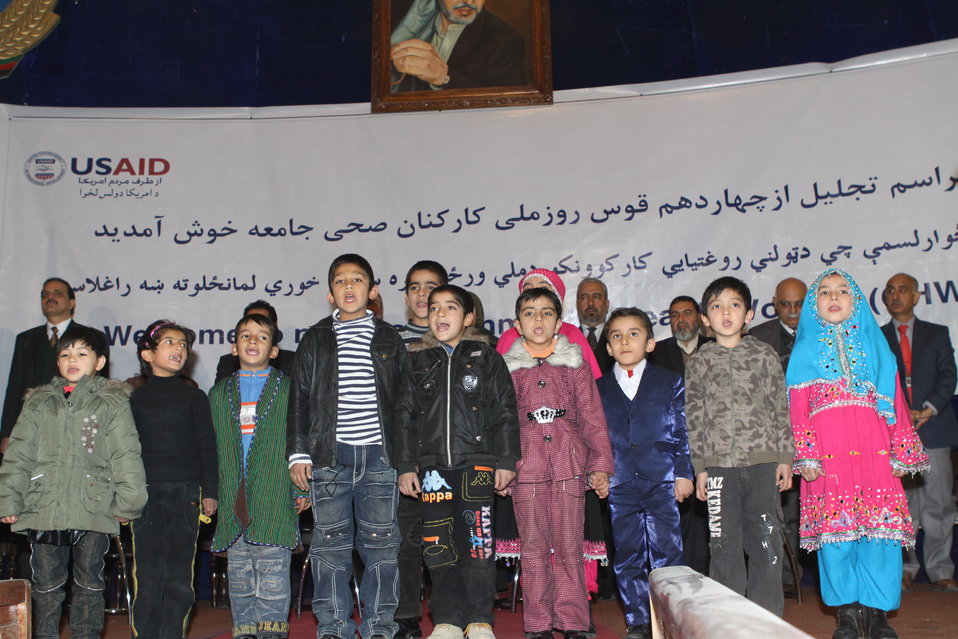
Community Health Workers Celebrated

Kabul, Afghanistan | December 5, 2010 — In support of the United Nations designated International Volunteer Day for Economic and Social Development, Afghanistan’s Ministry of Public Health celebrated its annual Community Health Worker Day today. Acting Minister of Public Health Dr. Suraya Dalil, USAID Senior Deputy Mission Director Robert Hellyer, other government officials, and international donors joined in recognizing the critical contribution of community health workers in Afghanistan and encouraging them to continue their voluntary support to their communities.
The event praised the contributions of the more than 22,000 volunteers throughout the country who deliver community level health-education, counseling, and services out of village health posts located in private homes. The Ministry of Public Health envisioned that community-based healthcare programs will actively encourage communities and families to adopt healthy lifestyles and behaviors, and provide families access to high quality and socially acceptable preventative medicine and life-saving services.
“We have 22,000 community health workers in Afghanistan that are able to implement the basic and standard medicines. They all have been trained through a job description,” said Minister Dalil. Addressing the health workers, she added, “I am proud and feel powerful that I have people like you.”
USAID-funded health projects collaborate closely with the Ministry of Public Health to improve the health and nutritional status of Afghans, provide quality primary healthcare, and promote healthy behaviors at the community and household-levels. USAID supported the training of more than 9,000 of the volunteer community health workers currently working in Afghanistan.
“On behalf of the American people, I congratulate the Community Health Workers for their diligence to gain the skills and knowledge necessary to serve their communities in this important role,” said USAID Senior Deputy Mission Director Hellyer. “USAID strongly supports community based health care and believes that quality community-based health services are essential to reaching Afghanistan’s Millennium Development Goals.”
To support the Basic Package of Health Services, USAID assisted in developing the community health worker training manual, helped train community health worker supervisors and master-trainers, facilitated in-service training, and produced and developed reporting tools, job aids, and education materials.